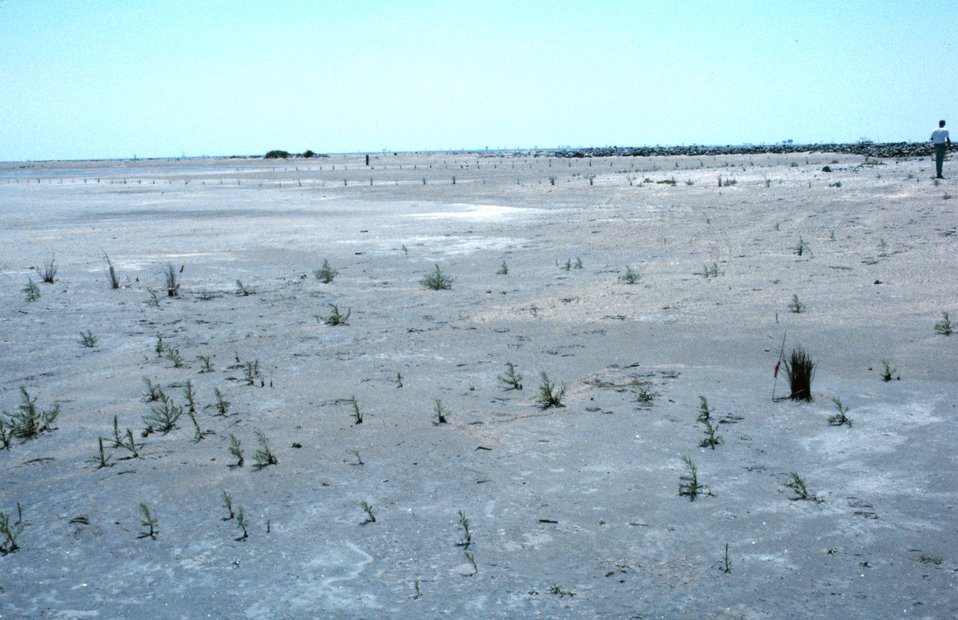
Patchy coverage of S. alterniflora beginning to show at the test planting site on the East Timbalier marsh platform.